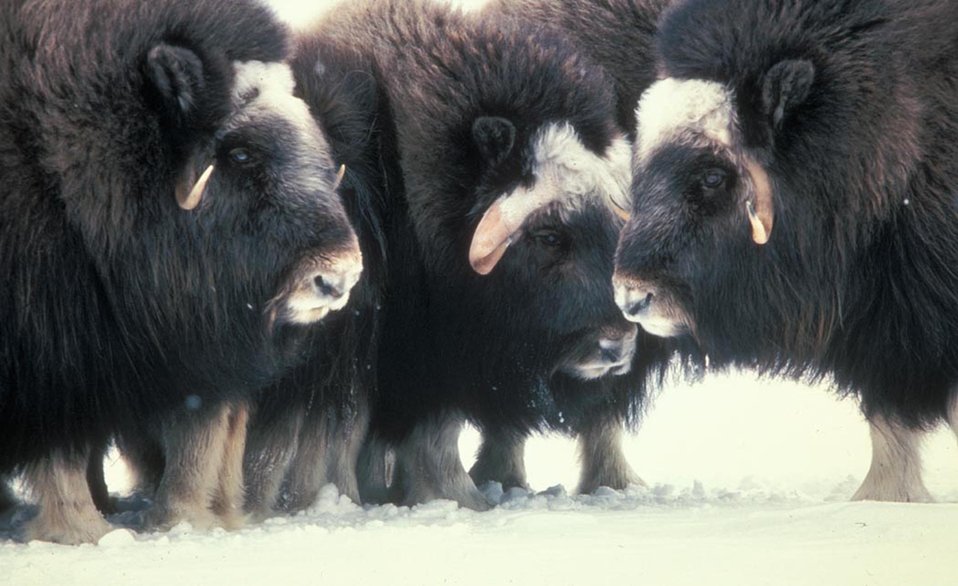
Muskoxen.